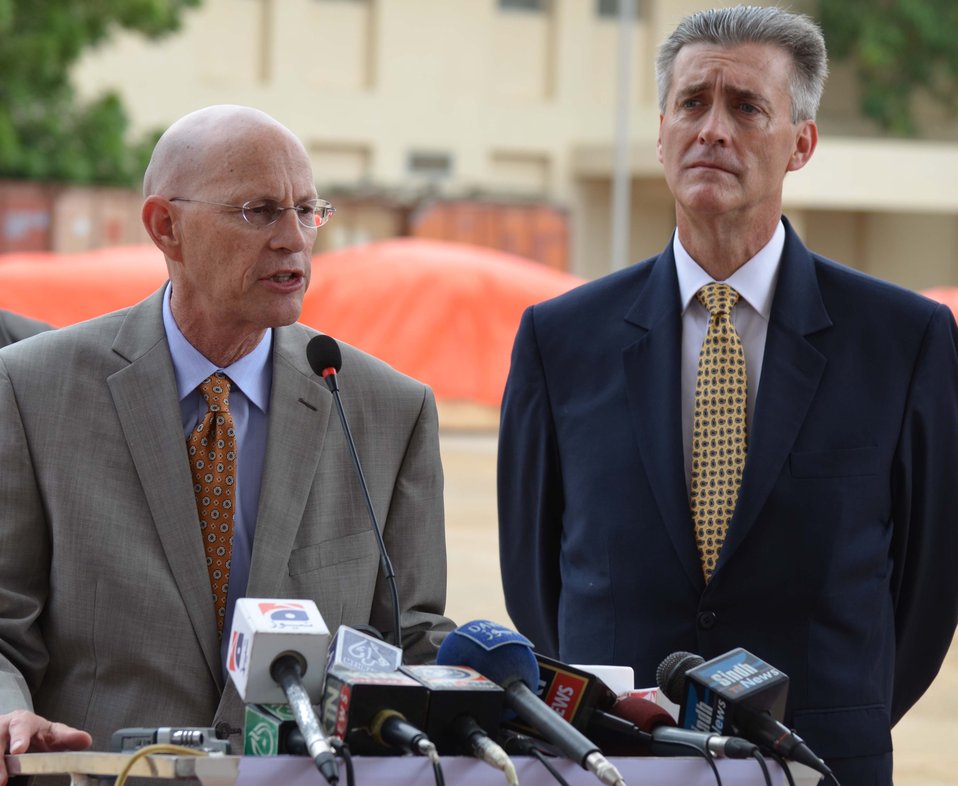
Ambassador Olson and USAID Mission Director Gregory Gottlieb answering media questions at the event